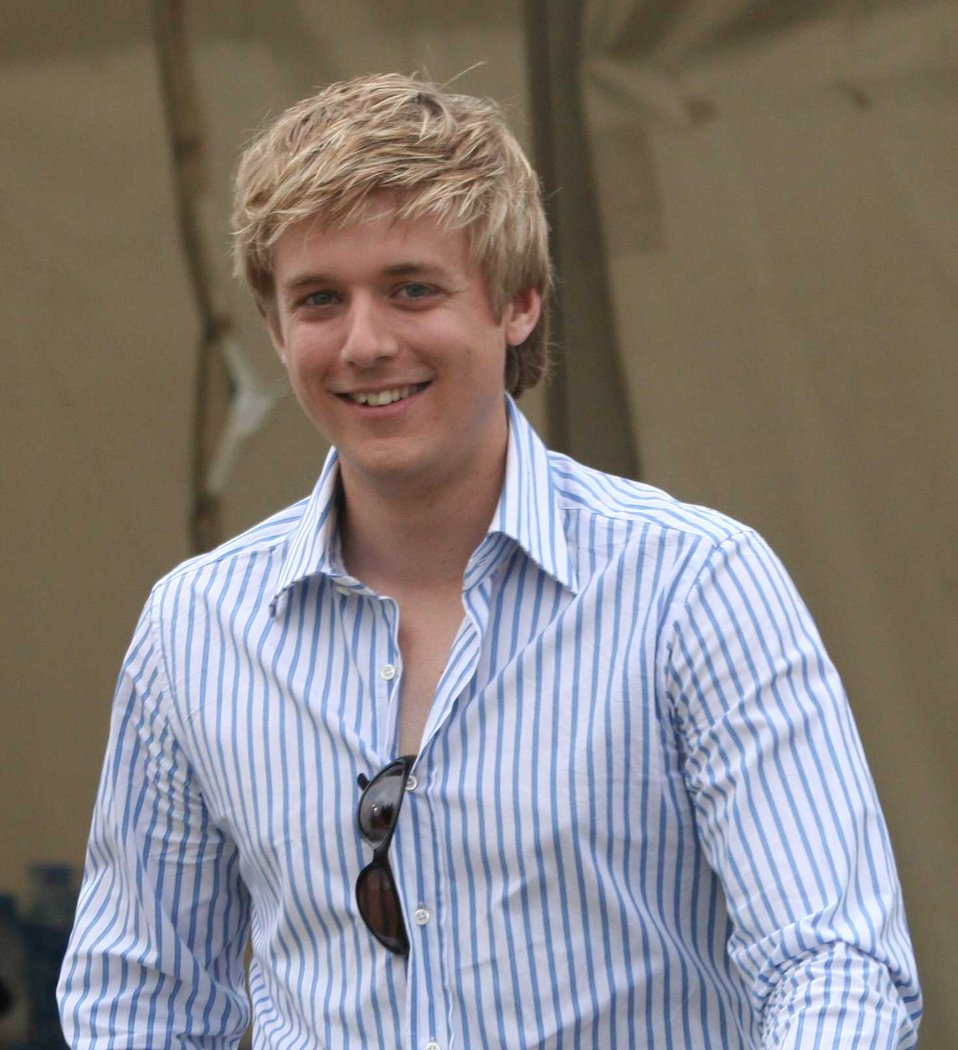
G4 Last Concert 2007 Image: Peter French, Flying Tigers Studio www.flyingtigers.co.uk